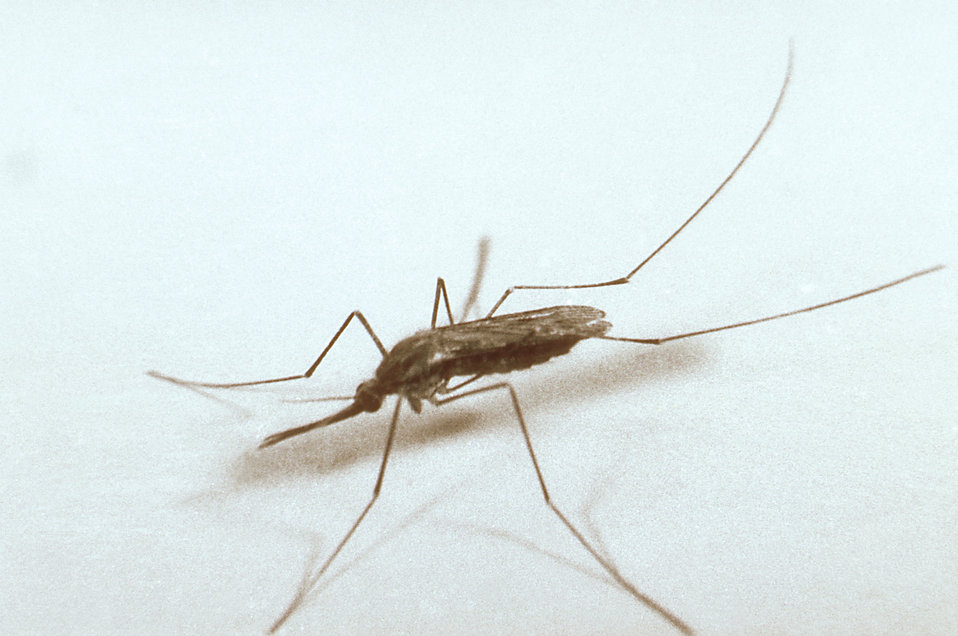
The Anopheles quadrimaculatus mosquito.